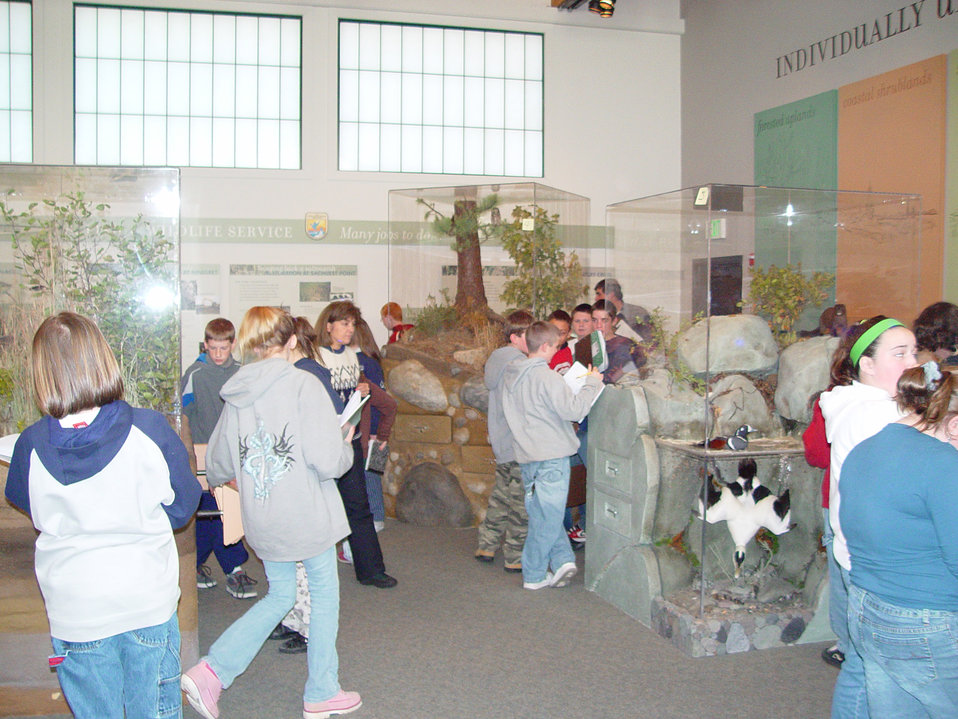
Kettle Pond Visitor Center

School group at Kettle Pond Visitor Center in Charlestown, RI.